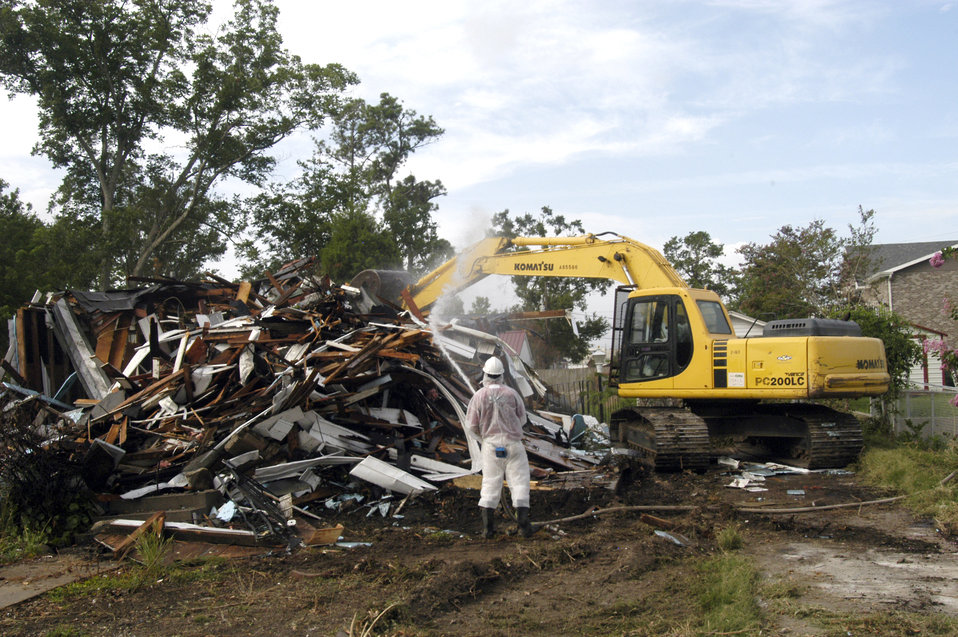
Many of the older homes and buildings in the New Orleans, LA, locale that were destroyed by Hurricane Katrina contained asbestos material (i.e. asbestos roofing tiles, transite siding, insulation, floor tiles, and popcorn ceilings). The U. S. Army Corps of Engineers (USACE) was mandated to follow strict environmental protocols in the demolition of these homes that were designated Regulated Asbestos Containing Material (RACM) demolitions. Prior to and during the demolition of the RACM house, water was constantly sprayed onto the building to prevent the asbestos containing material from becoming “friable” (airborne).